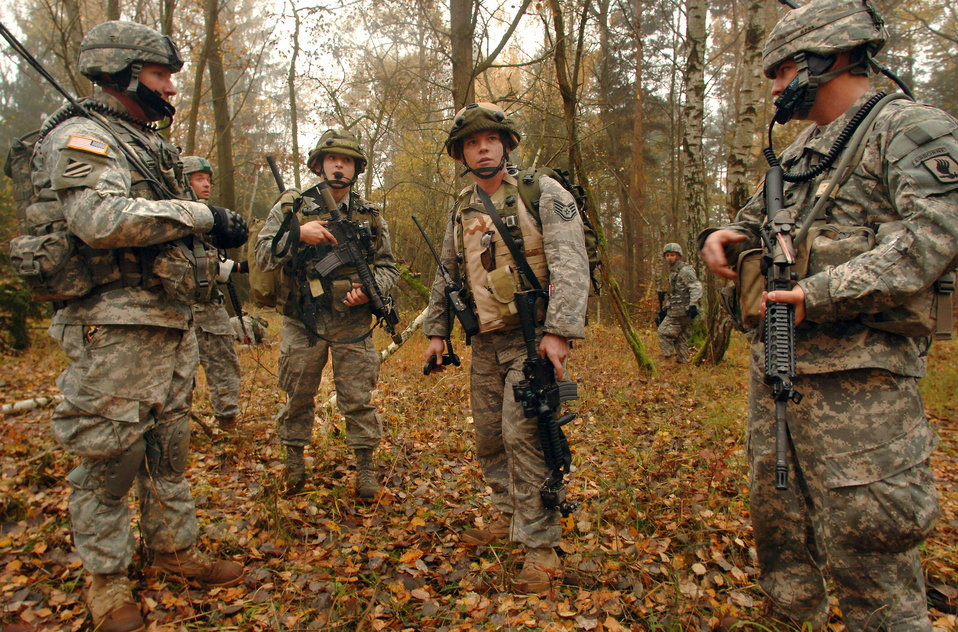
Forward air controllers prepare for war

Staff Sgt. William Thomas (center) and Airman 1st Class Michael Kelley accompany U.S. Army Soldiers in hiking to a nearby village for an urban warfare scenario during Exercise Allied Strike II Nov. 4 at Hohenfels Army Garrison, Germany. The Airmen assisted the 173rd Air Brigade Combat Team, 191 Cavalry, in pursuit of a